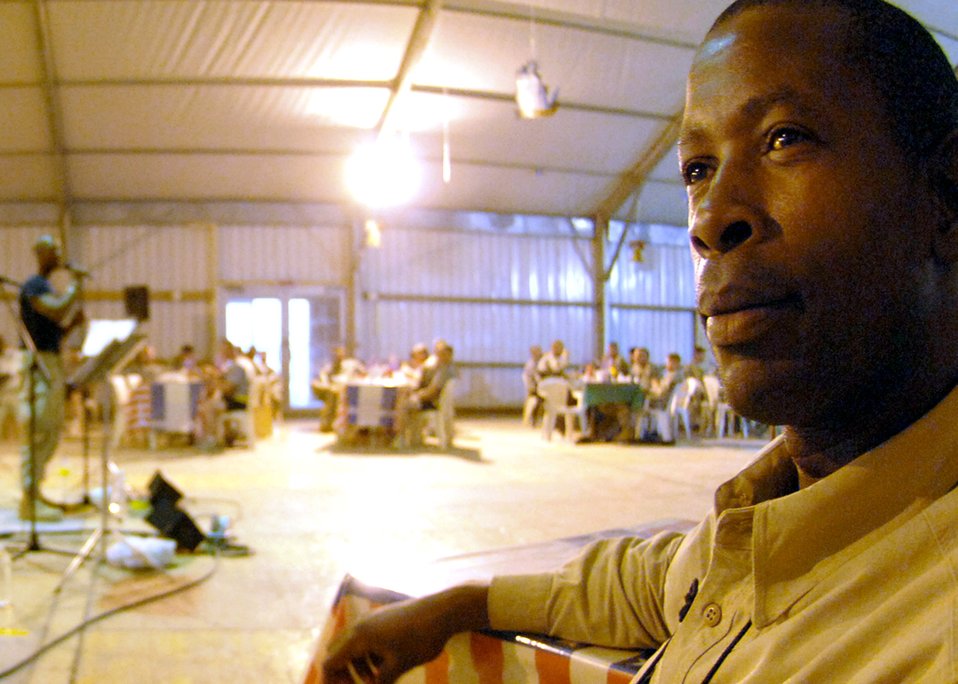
On tour in the AOR

Moses, a Ugandan security forces guard serving at Forward Operating Base Warhorse, Iraq, takes time out to enjoy the U.S. Central Command Air Forces Band